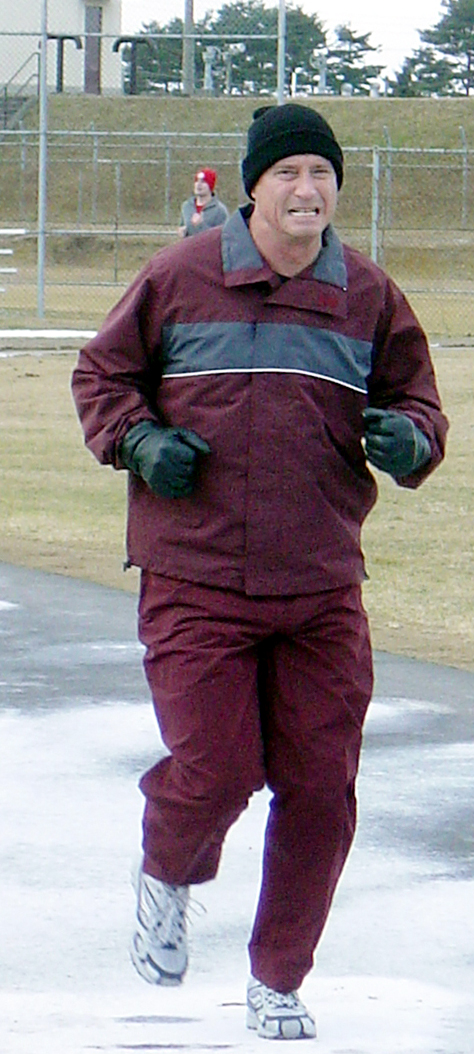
Frigid fitness

MISAWA AIR BASE, Japan -- Chief Master Sgt. Franklin Smith completes another lap of the